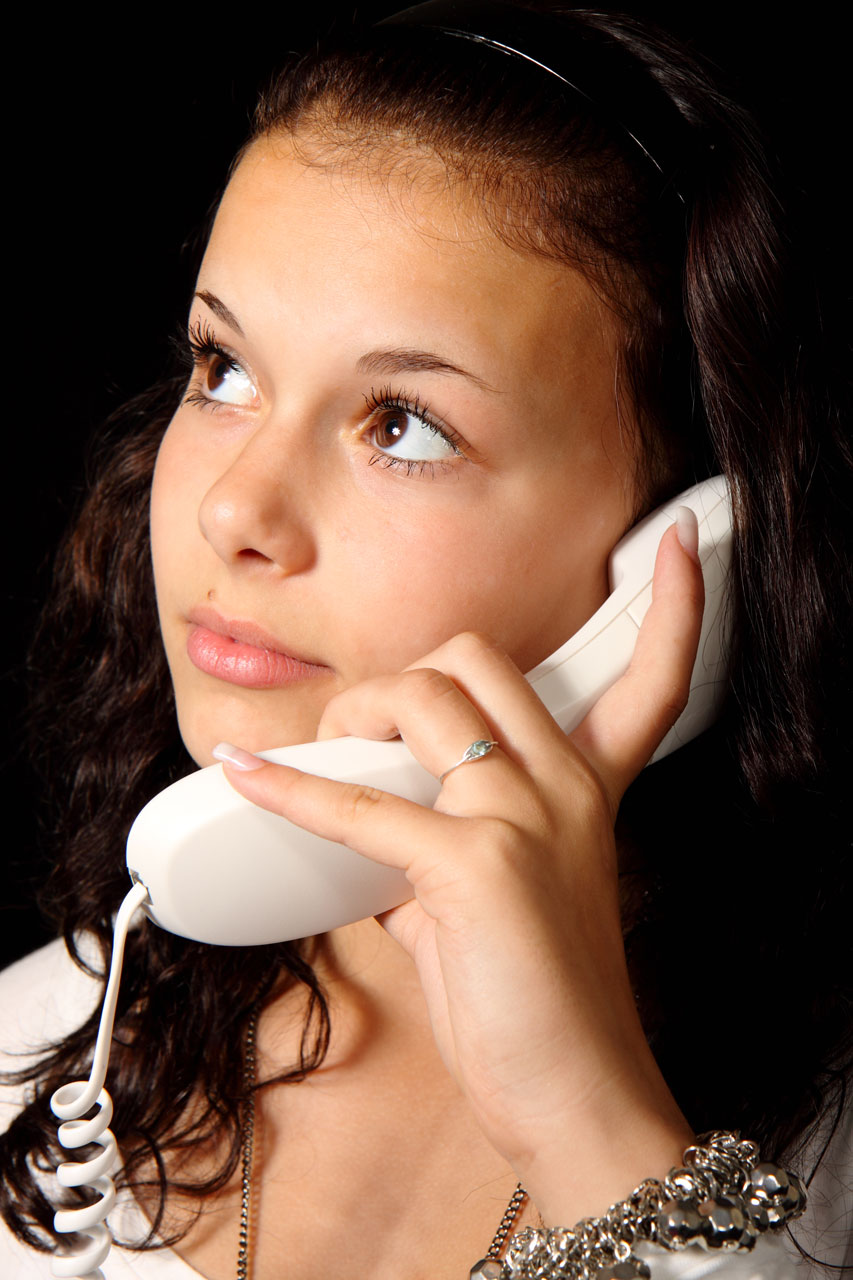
Young woman with telephone

Young woman making a phone call.